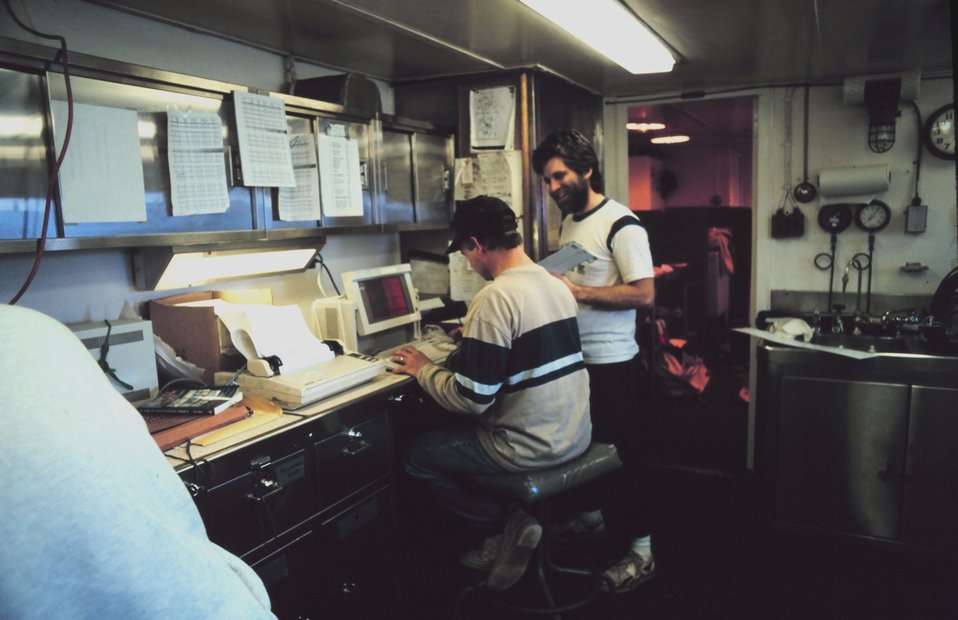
Scientists entering fisheries observations and data into computer